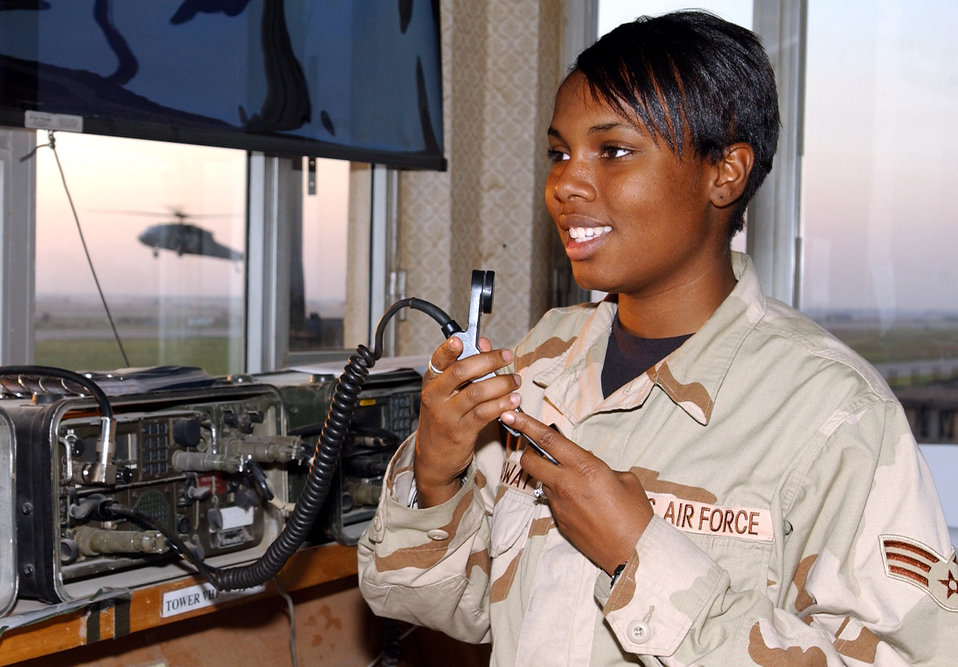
Controlling northern Iraq

KIRKUK AIR BASE, Iraq -- Senior Airman Kaishla Holloway gives directions to incoming Army helicopters from the control tower here. Helicopters make up the majority of local air traffic at the base. She is an air traffic controller deployed from Dyess Air Force Base, Texas.